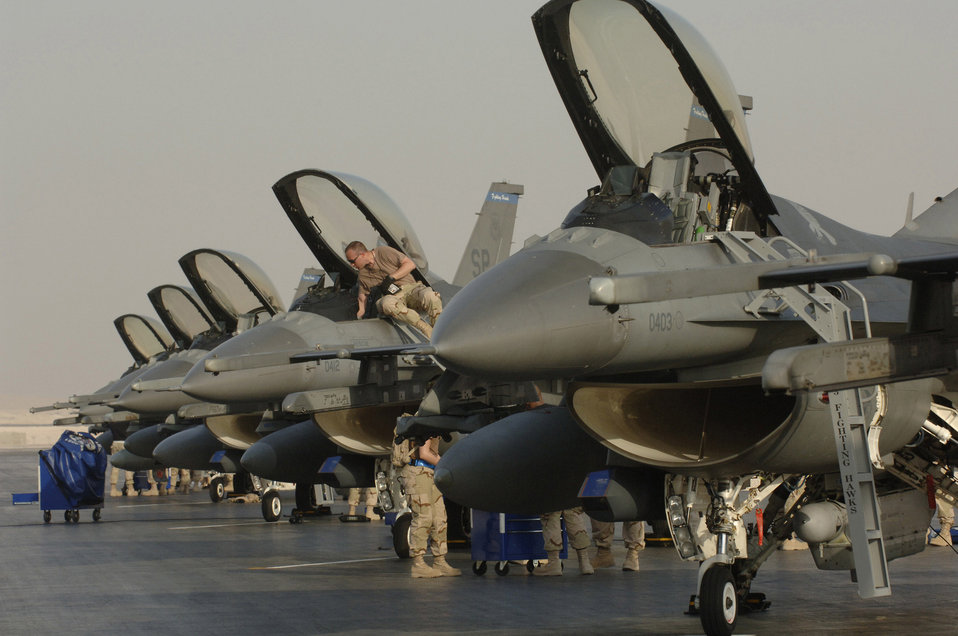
Airpower Summary for July 20

F-16 Fighting Falcons dropped guided bomb unit-12s and 38s, provided armed over-watch and shows of force with flares to support Operation Iraqi Freedom July 20. The F-16 is a compact, multi-role fighter aircraft. It is highly maneuverable and has proven itself in air-to-air combat and air-to-surface attack. It provides a relatively low-cost, high-performance weapon system for the United States and allied nations.